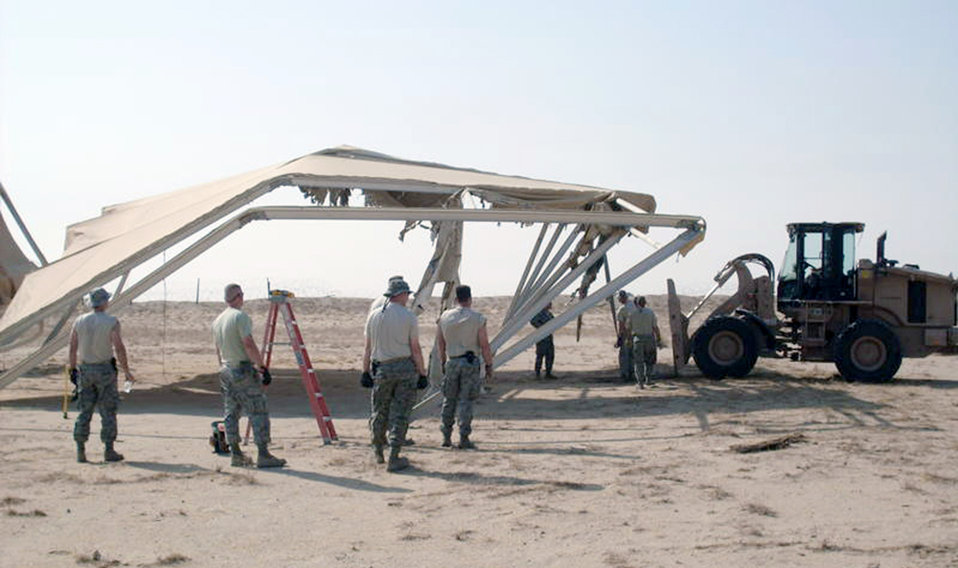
386th goes green

Airmen from the 386th Expeditionary Civil Engineer Squadron demolish sunshades Sept. 2, 2010, in Southwest Asia. More than 9,470 pounds of scrap metal, with a value of more than $4,700, were collected during the tear-down.